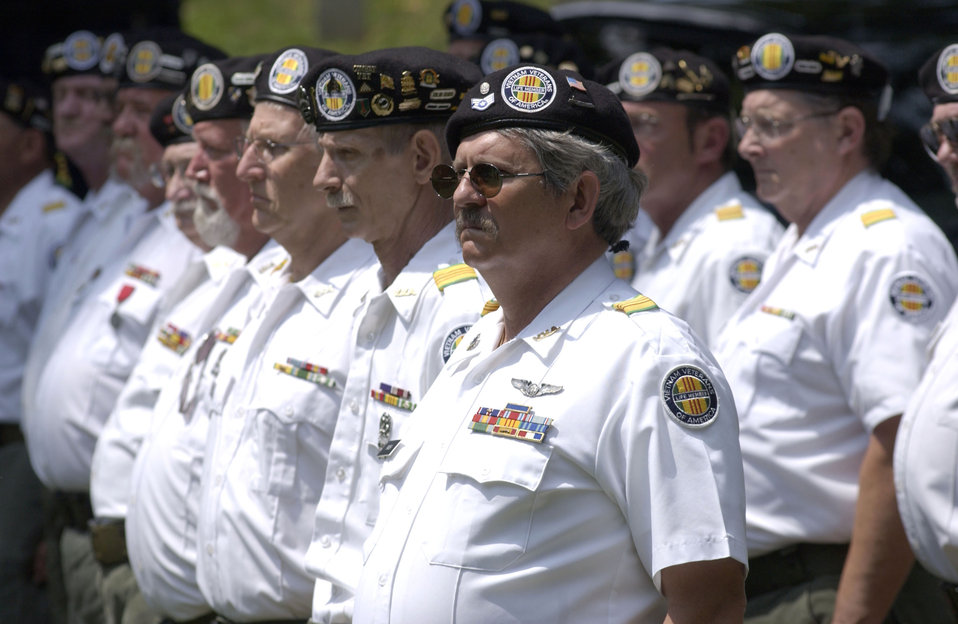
Father's Day bittersweet for one Airman's family

Paul Parrish from the 172nd Chapter of the Vietnam Veterans of America stands with his fellow veterans at the funeral for Staff Sgt. Calvin Cooke Jr. at Arlington National Cemetery in Arlington, Va., on Tuesday, June 20. Sergeant Cooke, a C-130 Hercules loadmaster, died in April 1972 when his aircraft crashed in South Vietnam after being hit by ground fire. His remains were identified last month by experts at the Joint Prisoner of War/Missing in Action Accounting Command headquarters.